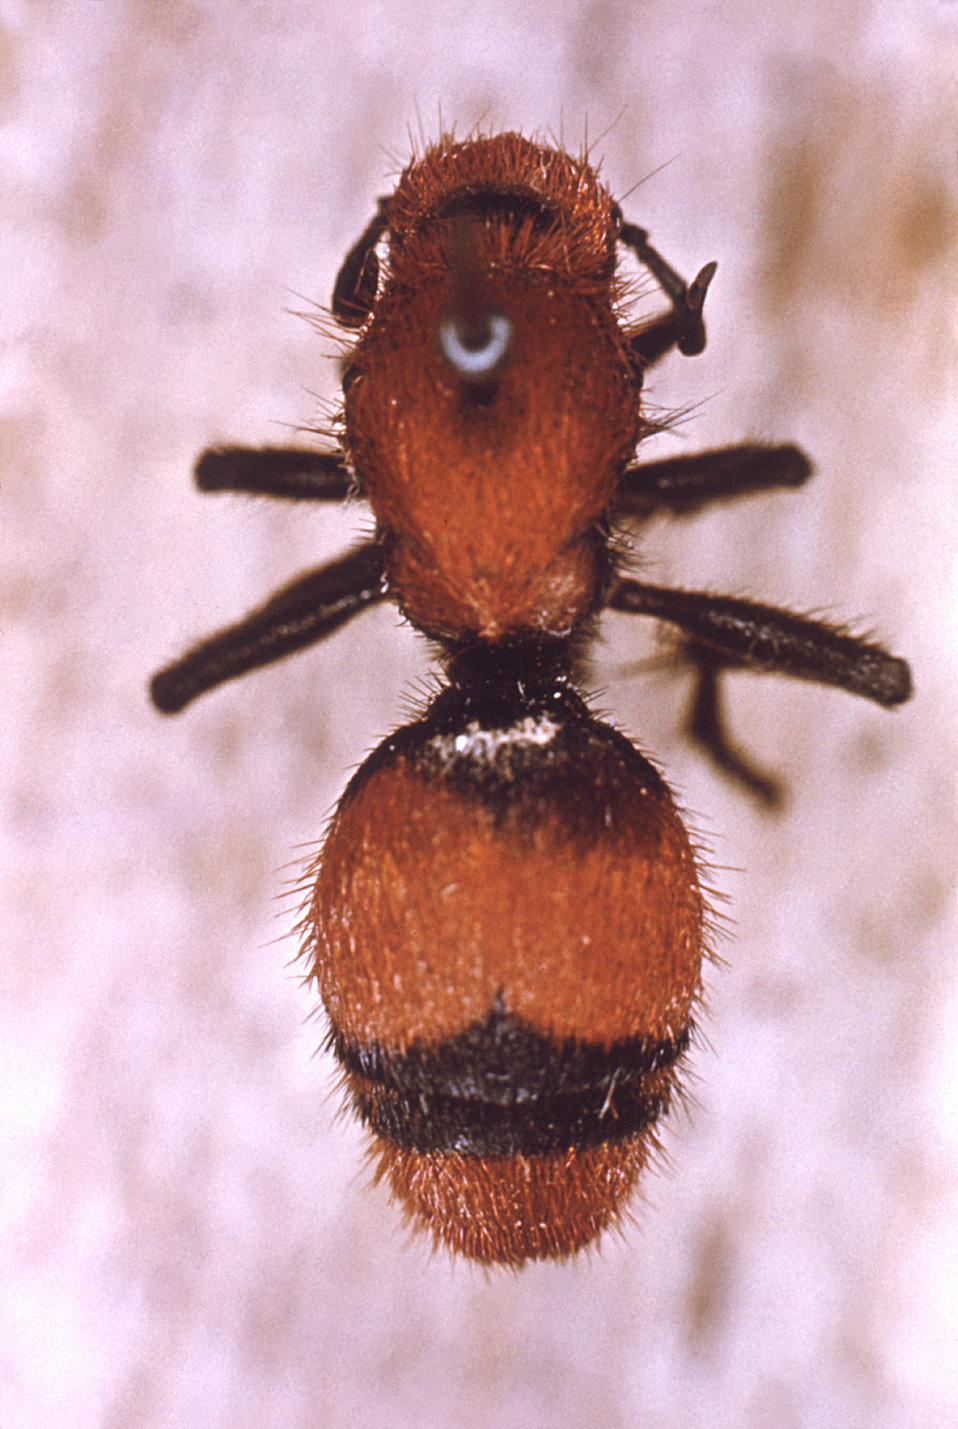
This is a dorsal view of a 'velvet ant', Dasymutilla occidentalis, which is actually a flightless wasp.